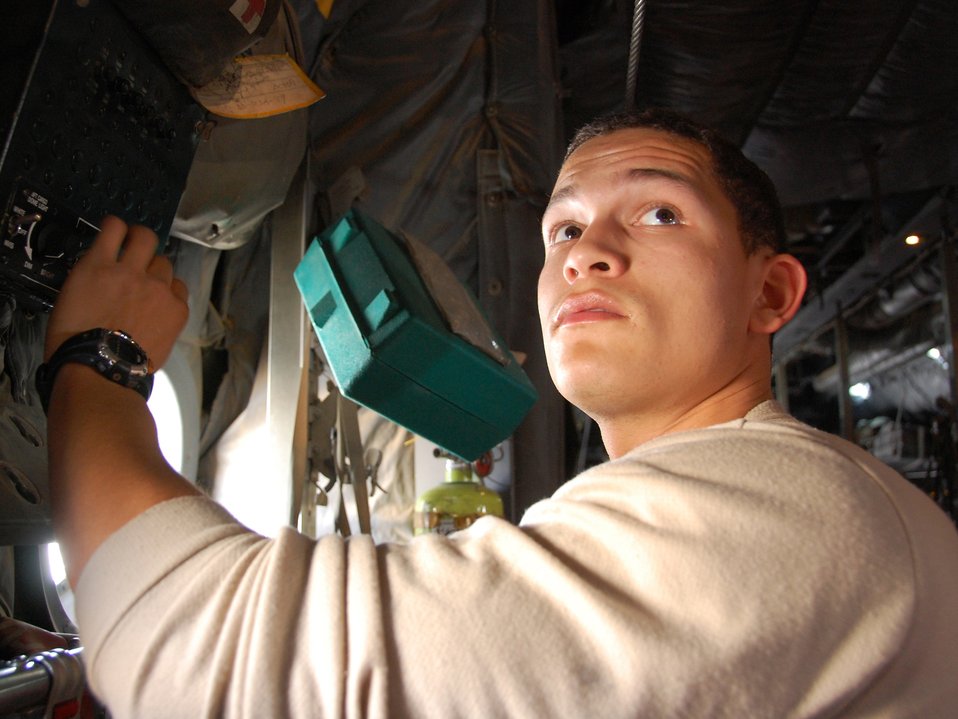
Airman makes sure cargo dome lights in a C-130 Hercules work

Airman 1st Class Edwin Rodriguez makes sure the cargo dome lights in a C-130 Hercules work after replacing the reostat knob Feb. 5, 2010, at an air base in Southwest Asia. Airman Rodriguez is a C-130H crew chief assigned to the 386th Expeditionary Aircraft Maintenance Squadron.